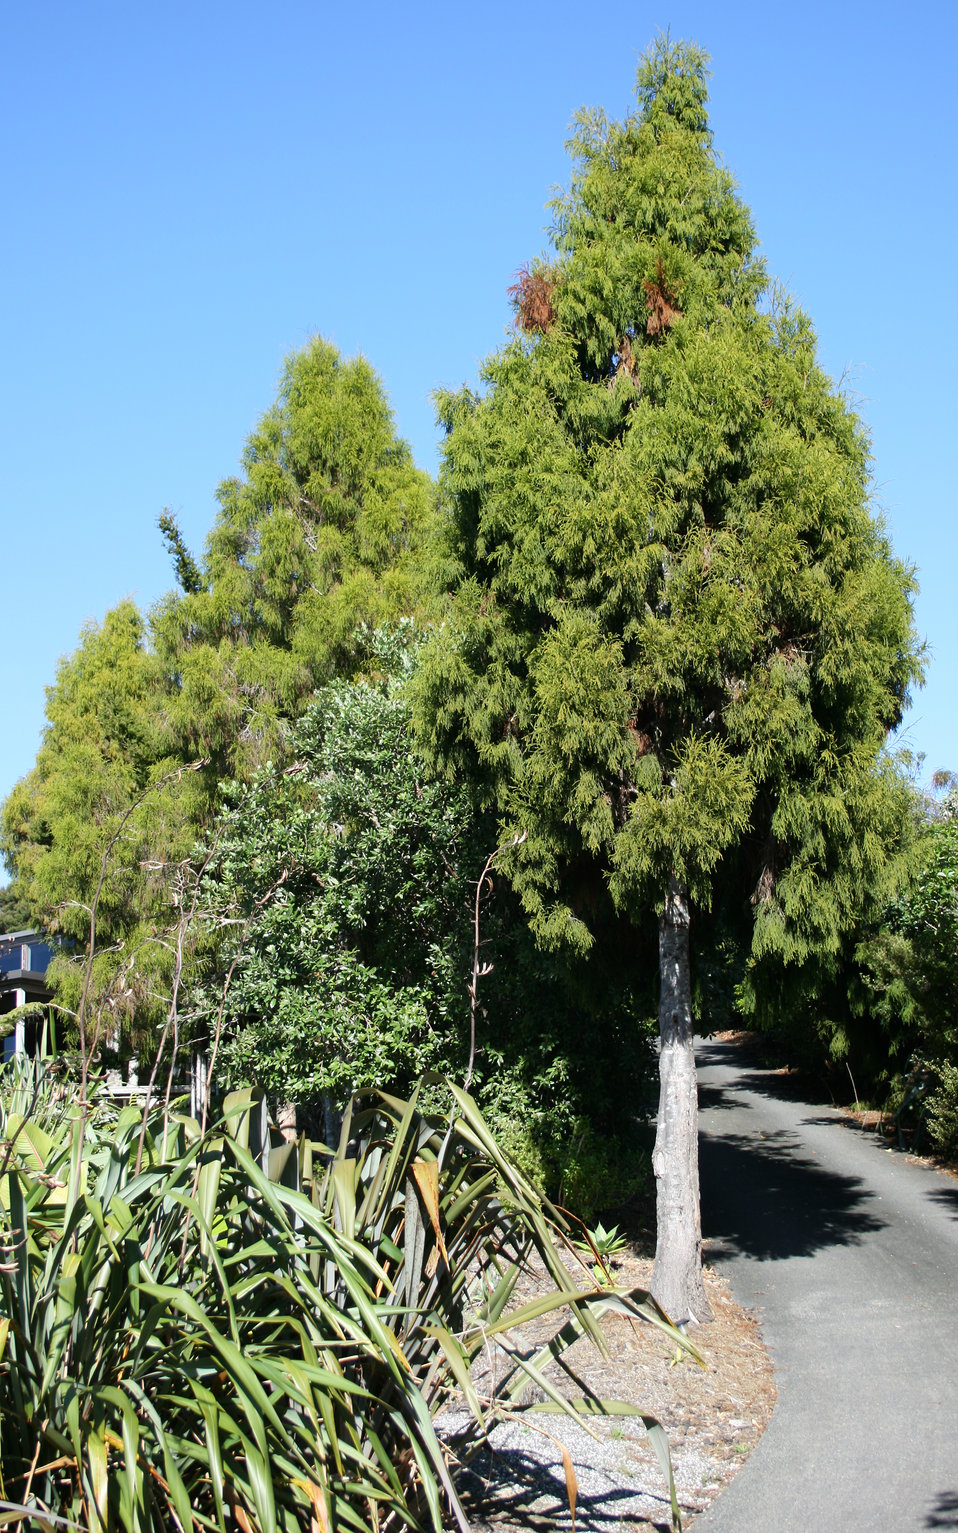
Dacrydium cupressinum, Young Rimu trees, endemic to New Zealand, growing in cultivation at Opua, North Island, New Zealand.